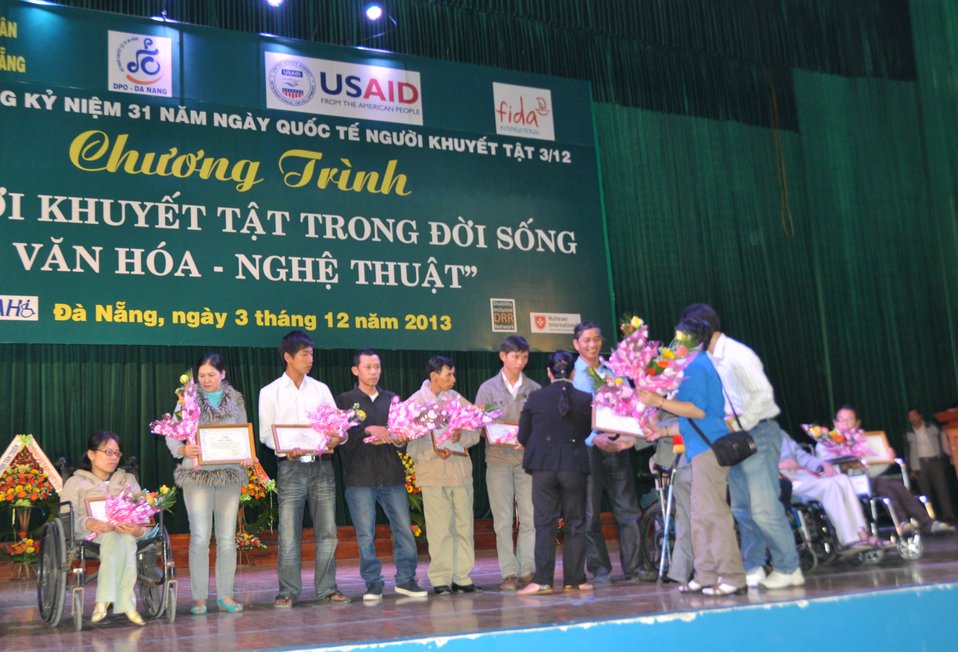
USAID Supports Commemoration of International Day of Persons with Disabilities 2013 in Danang

Danang, December 3, 2013.